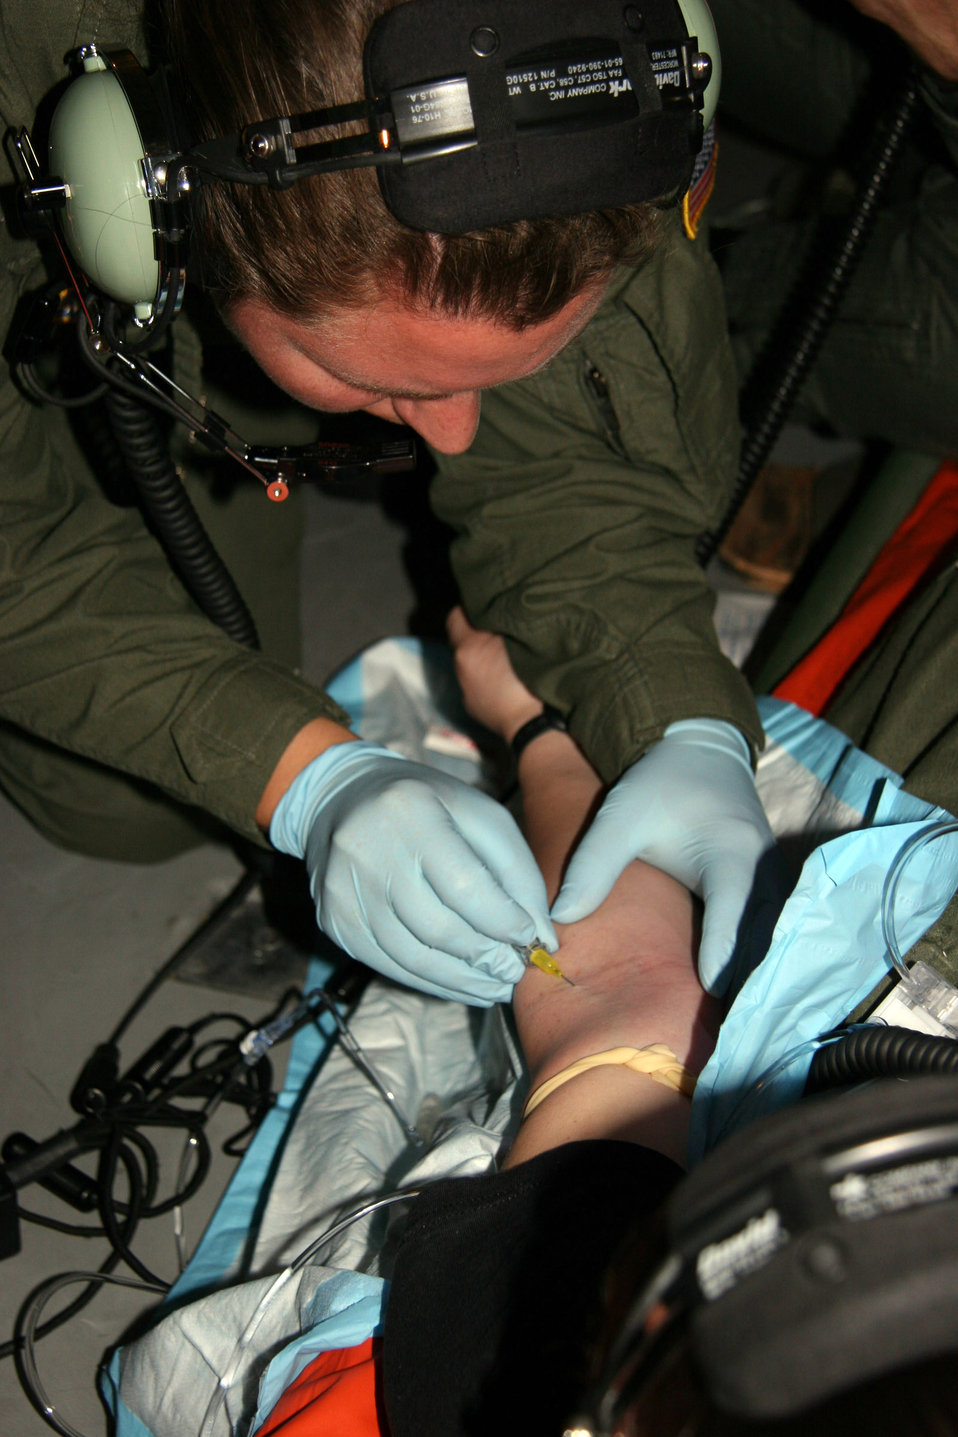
Medevac training

OVER THE PACIFIC OCEAN (AFPN) -- Senior Airman Courtney Johnson practices starting an IV line on a dummy. The 349th Aeromedical Evacuation Squadron medical technician trained aboard a KC-135 Stratotanker aircraft after leaving Marine Corps Base Kaneohe Bay, Hawaii, after three days of training. The squadron is from Travis Air Force Base, Calif. The tanker is from the Reserve's 939th Air Refueling Wing at Portland International Airport, Ore.